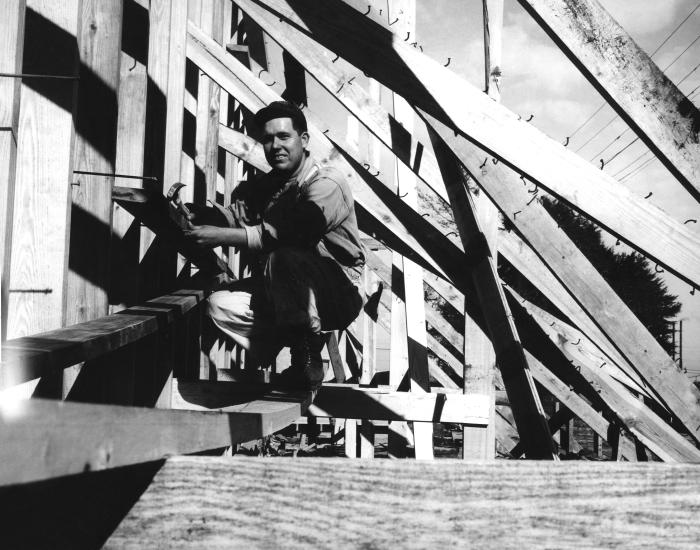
Provided by the Center for Disease Control's (CDC), National Institute for Occupational Safety and Health (NIOSH), this historic 1943 image depicted a male construction worker situated in a crouching position atop a wooden beam, which was located on a construction site. He was about to affix the wooden plank using hammer and nails. Note that he was not wearing any protective eyewear, which would now be required in order to protect him against flying debris such as nails and wood chips. Today, he would also be required to wear a hard hat, which would have helped to protect his head from accidental blunt trauma.